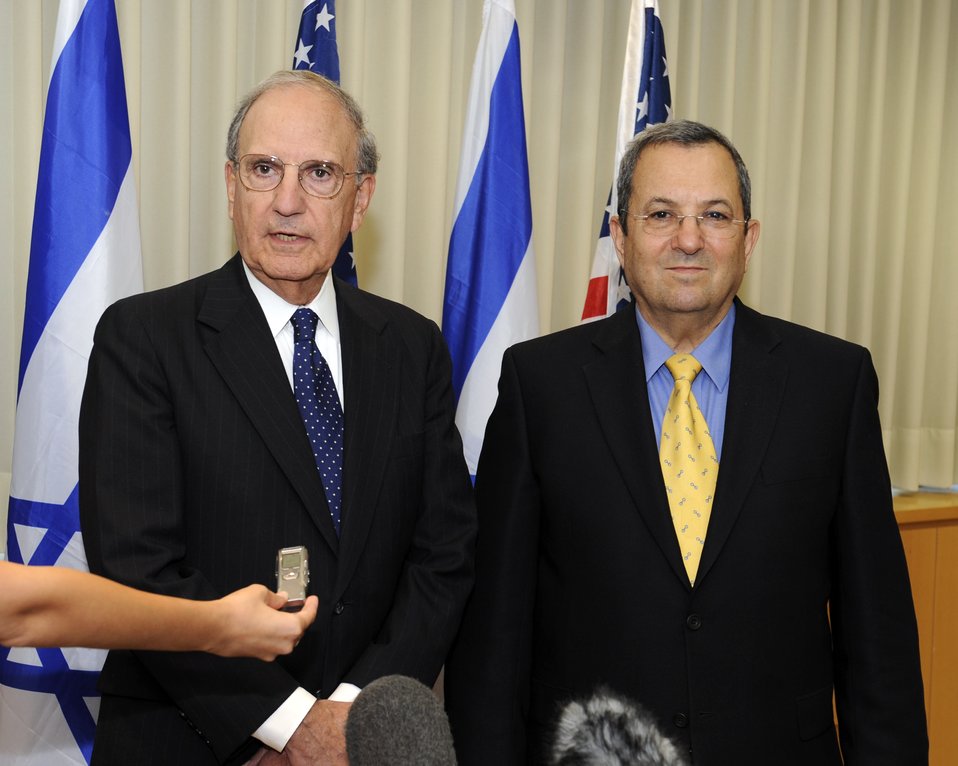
U.S. Special Envoy George Mitchell Meets With Israeli Defense Minister

U.S. Special Envoy George Mitchell with Israeli Minister of Defense Ehud Barak before their meeting in Tel Aviv, Israel July 26, 2009.